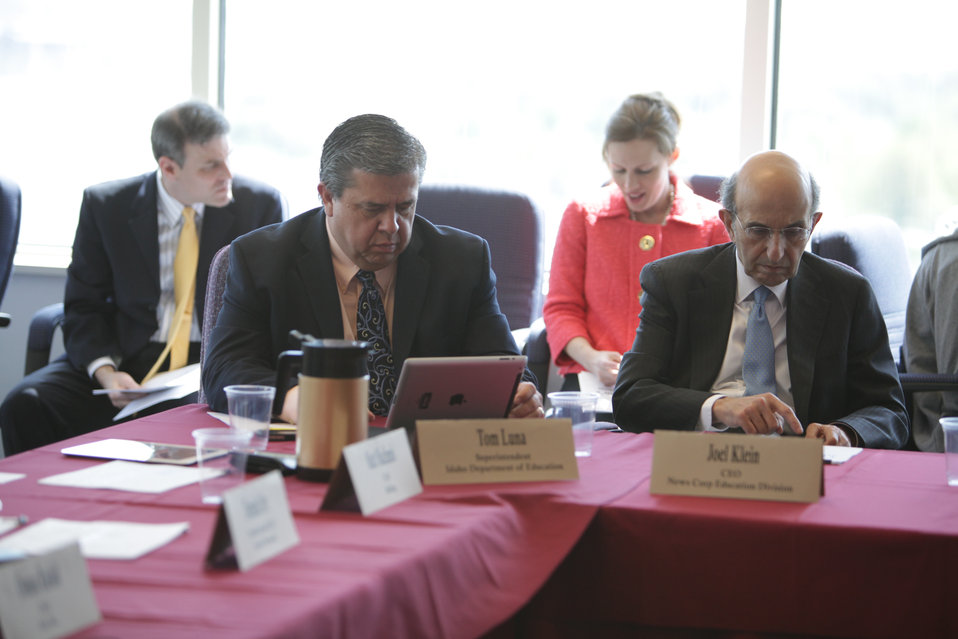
FCC Chairman Host Leaders From the Digital Education Ecosystem

Superintendent of the Idaho State of Education, Tom Luna at the FCC Chairman's event at FCC's HQ in Washington, DC on March 29, 2012.